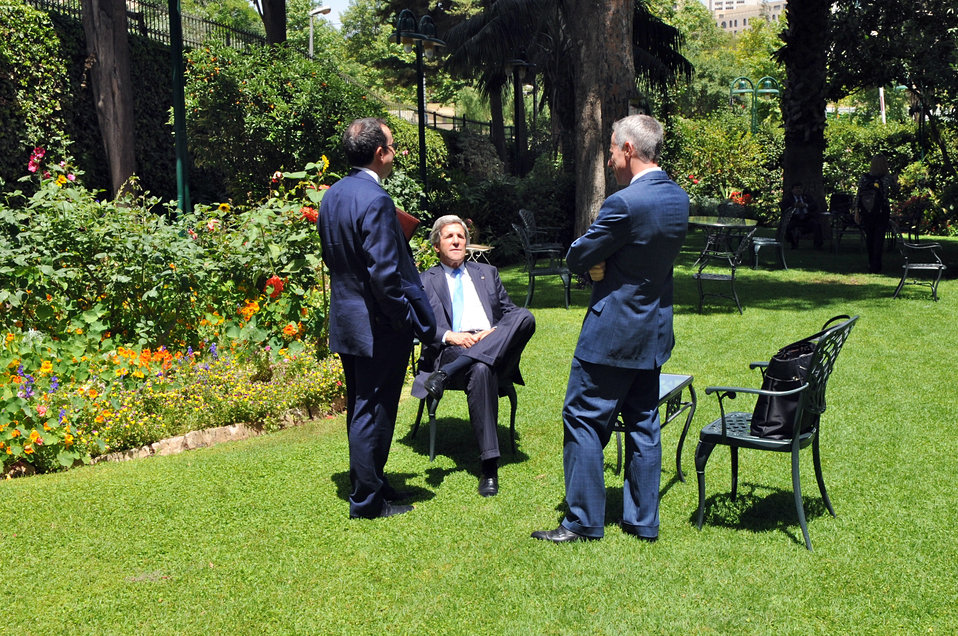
Secretary Kerry Speaks With Consul General Ratney and Ambassador Bass

U.S. Secretary of State John Kerry speaks with U.S. Consul General Michael Ratney and Ambassador John Bass as he enjoys a moment in the sun before a meeting at the U.S. Consulate General in Jerusalem on May 24, 2013.